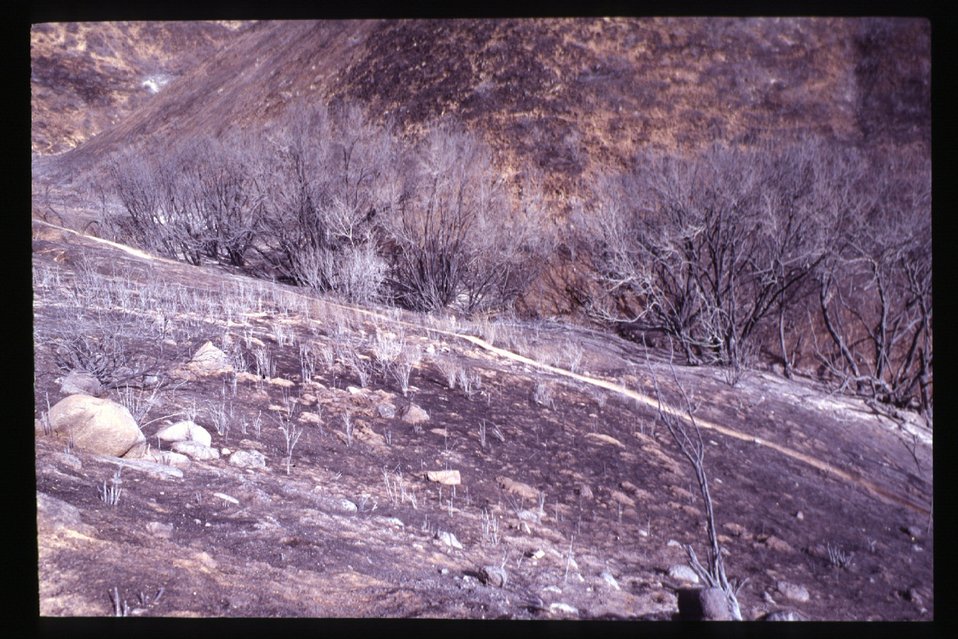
8th Stree Fire aftermath Boise Front Hulls Gulch Four Rivers Field Office LSRD Lower Snake River District